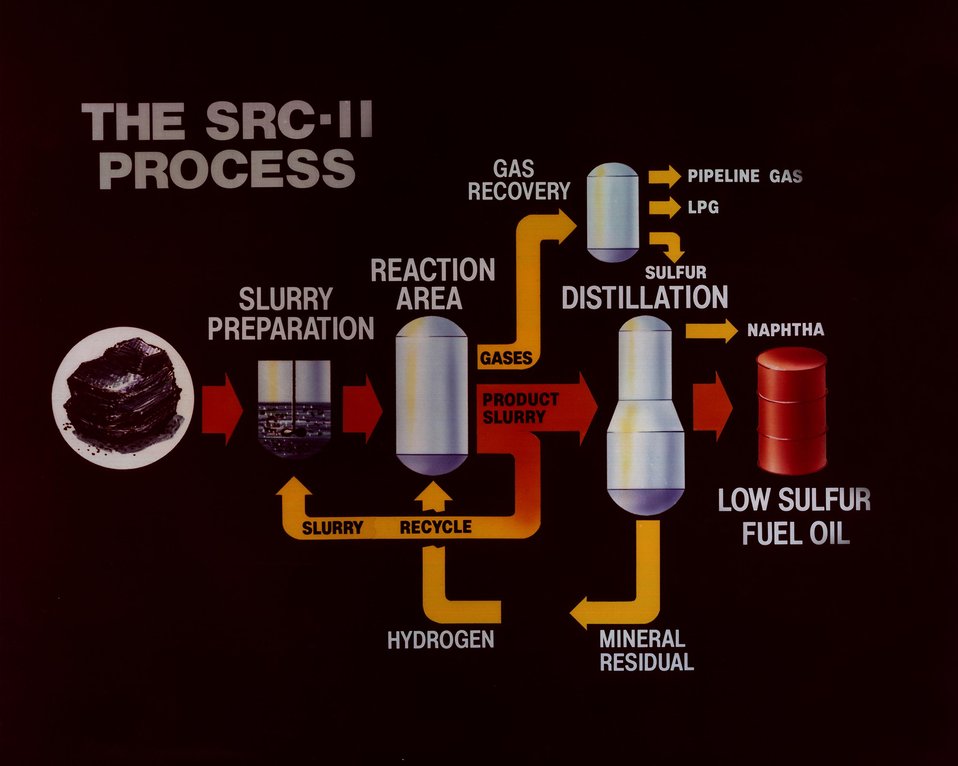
PART III OF A FLOW DIAGRAM ILLUSTRATING THE SRC-II PROCESS.